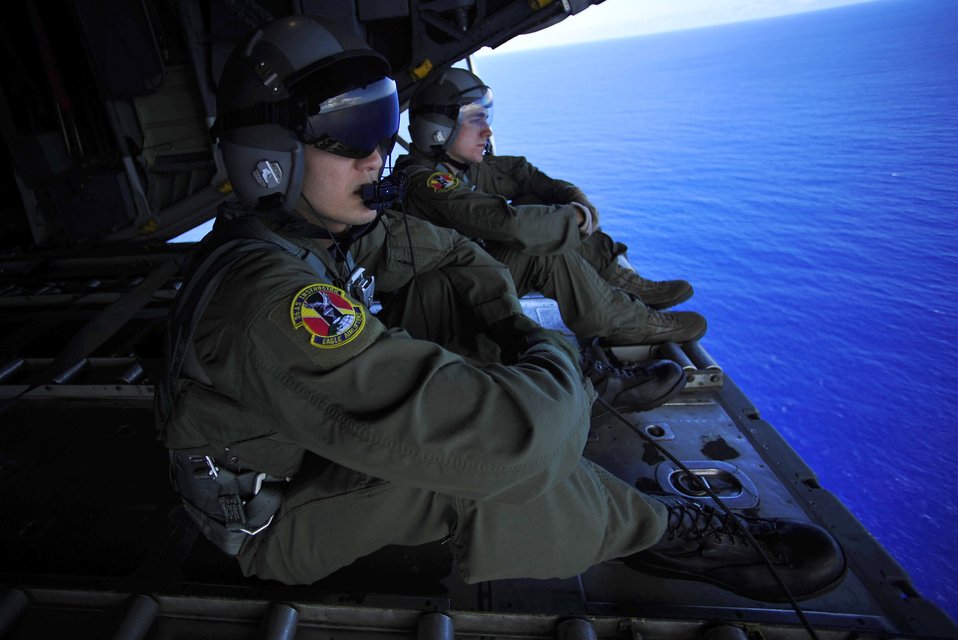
Vantage point

Staff Sgt. Keo Khamonel and Staff Sgt. Stewart Guethlein admire the view from the back of a C-130 Hercules Feb. 23, 2011, over Tumon Bay, near Guam, during exercise Cope North. Sergeants Guthlein and Khamonel are loadmasters assigned to the 36th Airlift Squadron at Yokota Air Base, Japan.